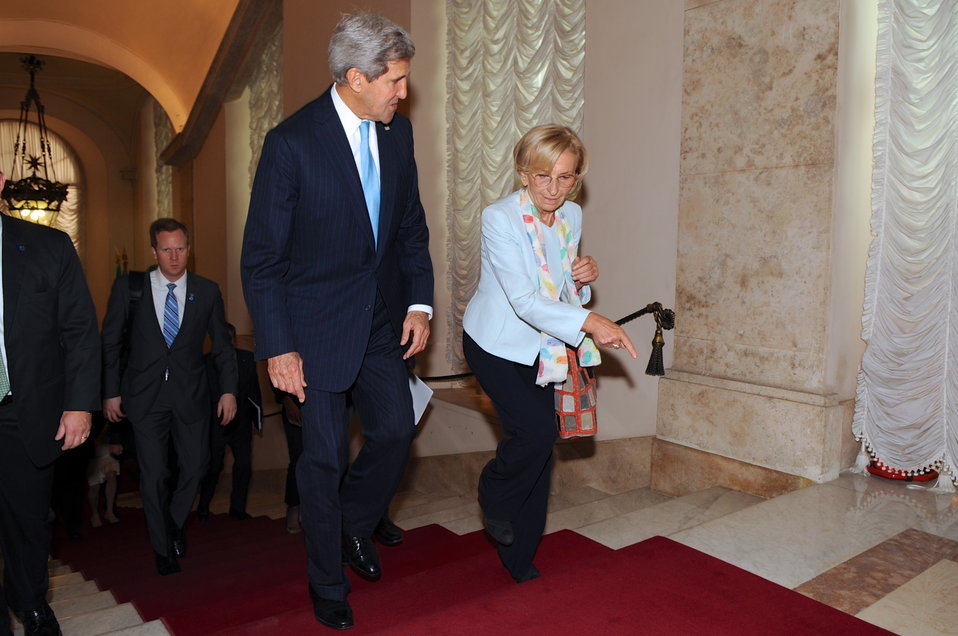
Italian Foreign Minister Bonino Escorts Secretary Kerry

Italian Foreign Minister Emma Bonino escorts U.S. Secretary of State John Kerry to a meeting with Italian Prime Minister Enrico Letta in Rome, Italy on October 23, 2013.